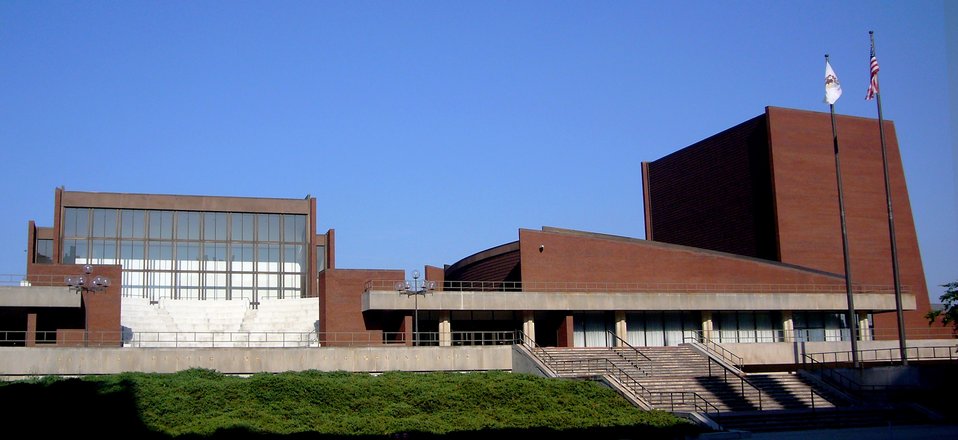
Krannert Center for the Performing Arts of the University of Illinois at Urbana-Champaign